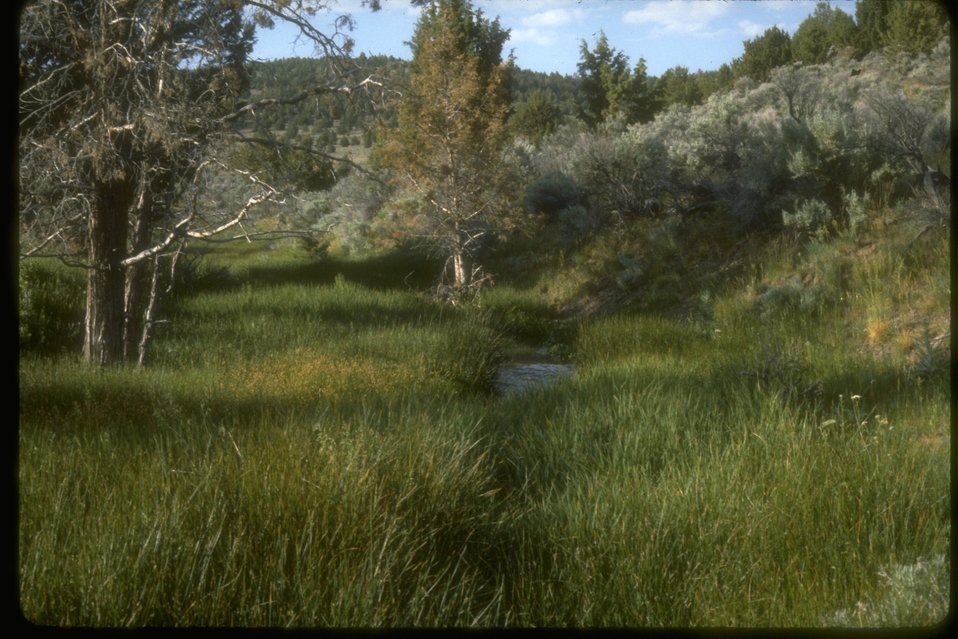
Riparian area along Duck Creek.